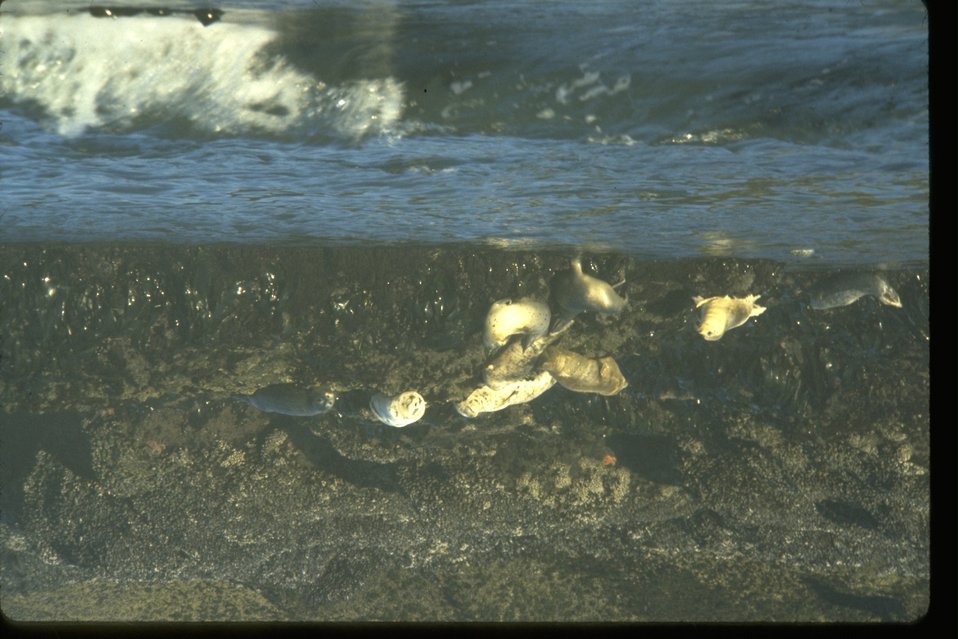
Harbor Seals on Seal Island in the Yaquina Head ONA.